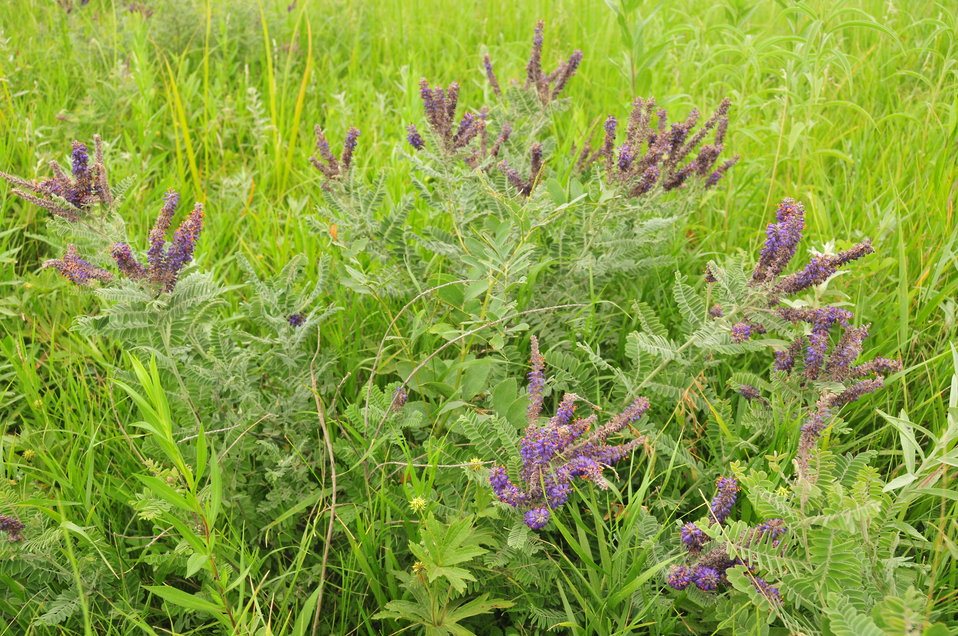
Leadplant (Amorpha canescens) on Sand Lake WMD 01

Leadplant (Amorpha canescens) was found to be one of the most important forbs of mixed and tallgrass prairies when some of the first research on prairie was completed by John Weaver at the University of Nebraska. Although less prevalent today, it can still be found on high quality prairies today. In addition to the obvious purple flowers of the leadplant, there are at least 20 more native species visible in this photo. Lakota's call leadplant the buffalo bellow plant, because its purple flowers appear in summer during the bison rutting or bellowing period.